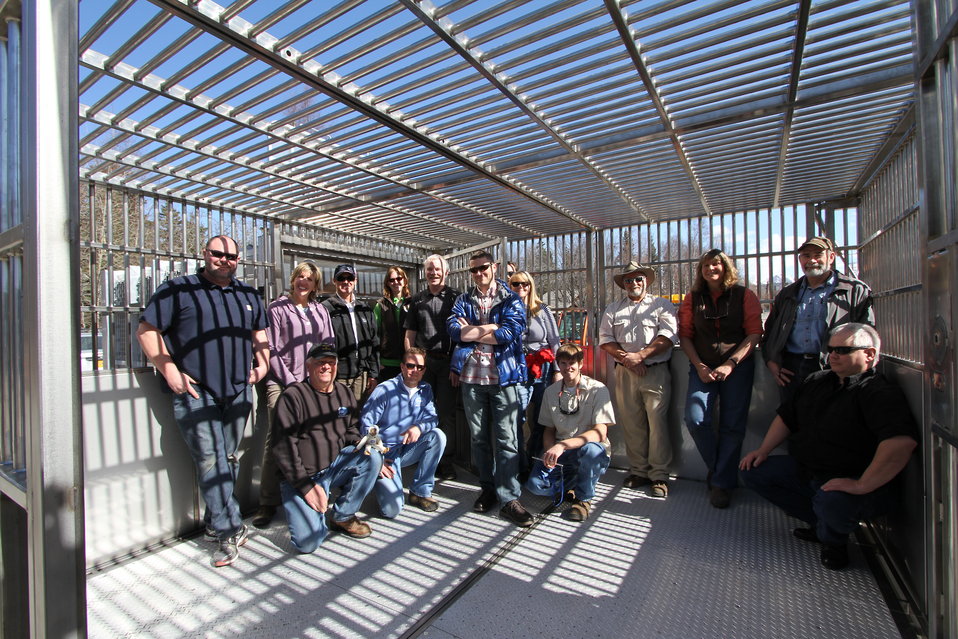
Polar bear holding module being set up at the Alaska Zoo before being shipped north. USFWS/Katrina Mueller